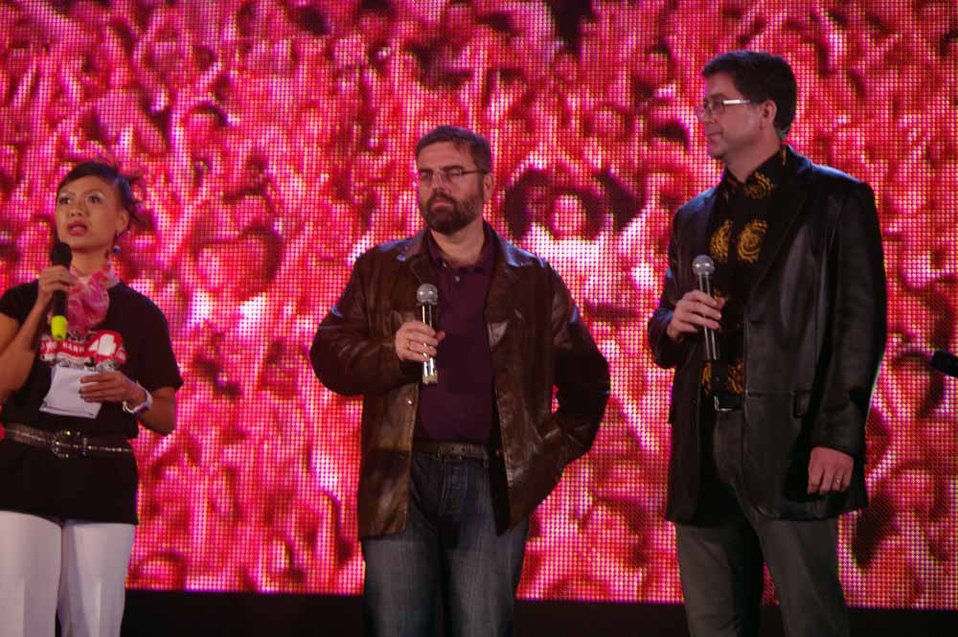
dance4life, Hanoi